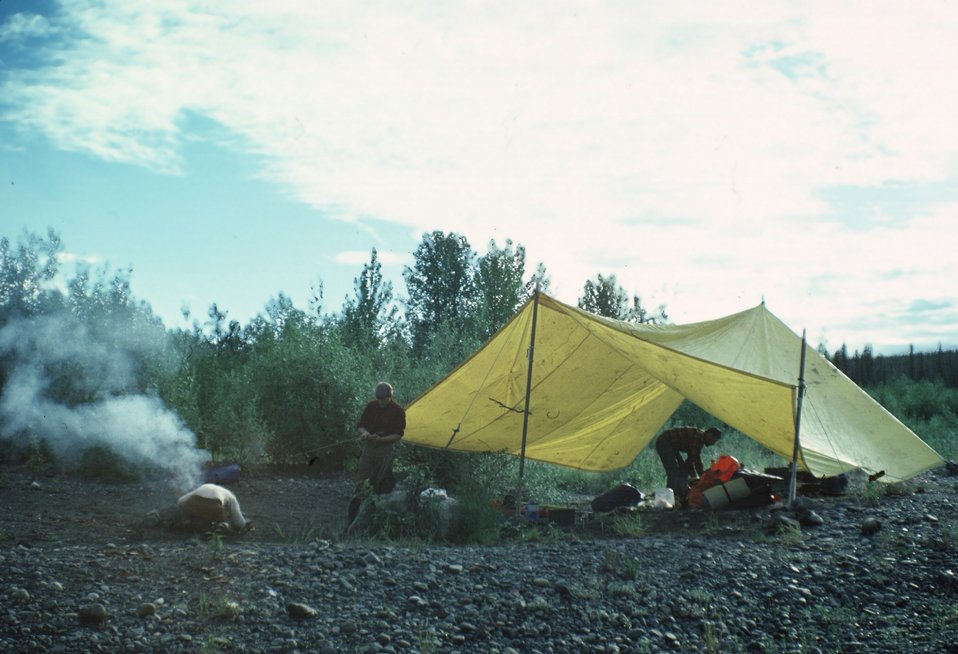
River camping, Gulkana NWSR